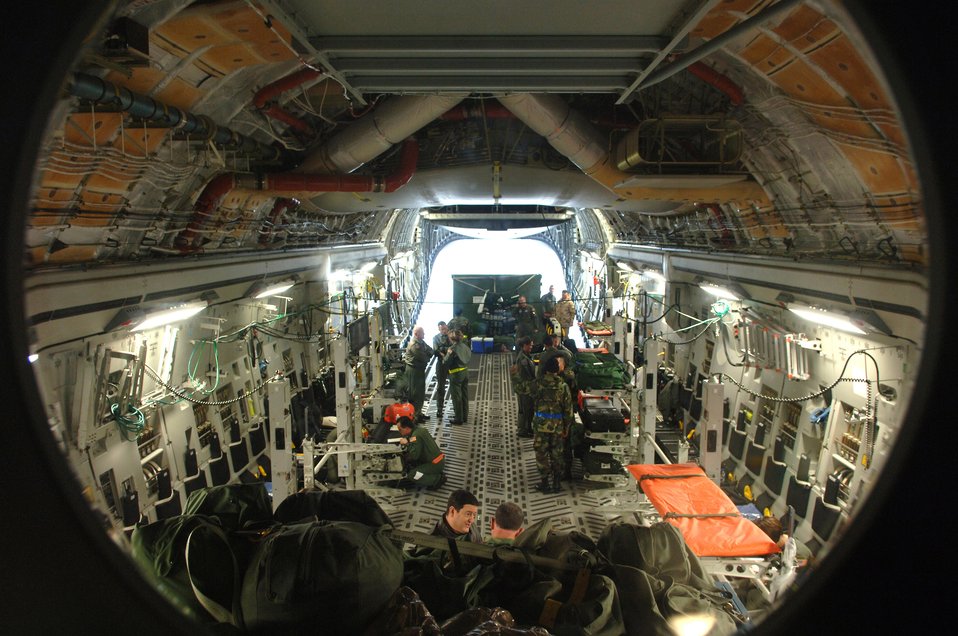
Medical modification

Airmen reconfigure a C-17 Globemaster III at Ramstein Air Base, Germany after a medical evacuation flight from Southwest Asia. The Airmen are from the 86th Aeromedical Evacuation Squadron and the Contingency Aeromedical Staging Facility.